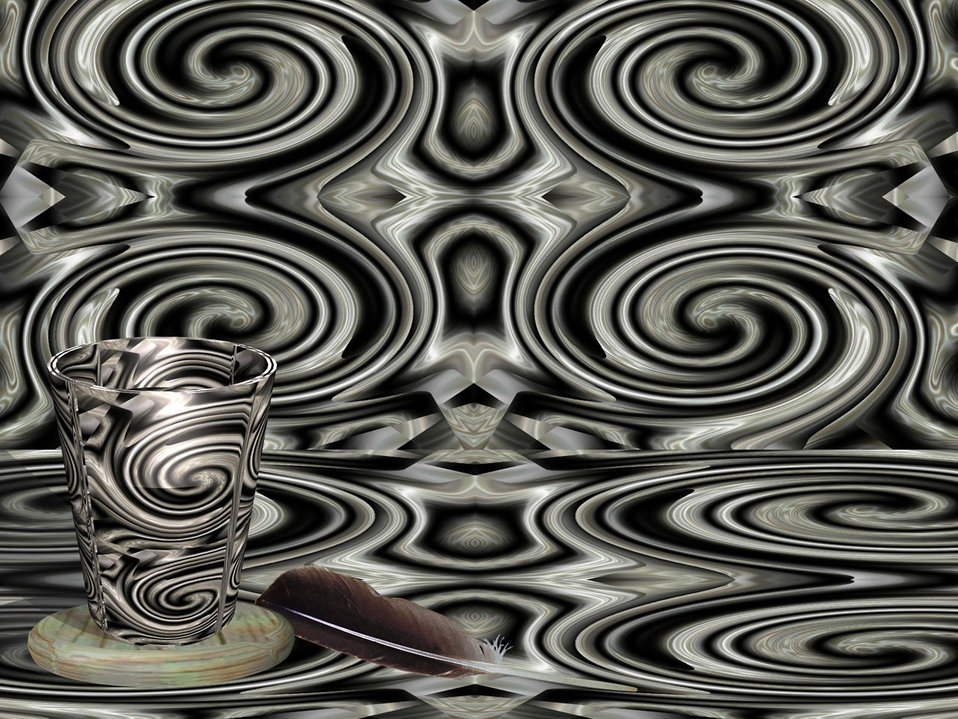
Synergy 3d.